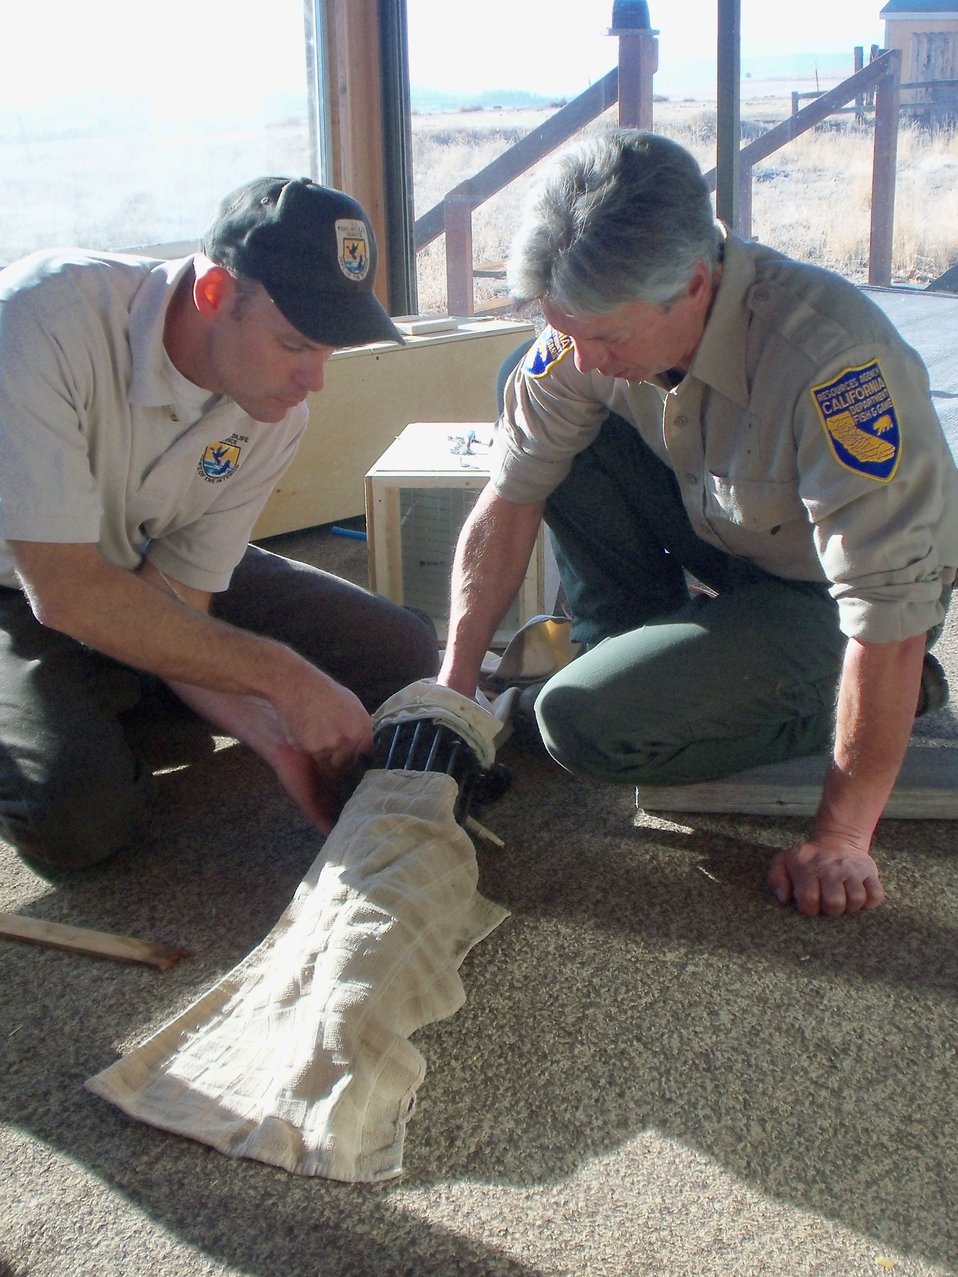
Fisher Translocation Pilot Project

Federal and state wildlife biologists prepare to relocate a fisher, a small cat-sized mammal, from the Klamath Mountains near Yreka, Calif., to a Northern Sierra forest. Prior to the release of these fishers in 2008 when the pilot project began, fishers have not been found in the northern Sierra for nearly 100 years. In the spring of 2013, the offspring the fishers that have been relocated to the Sierra have now had offspring of their own.